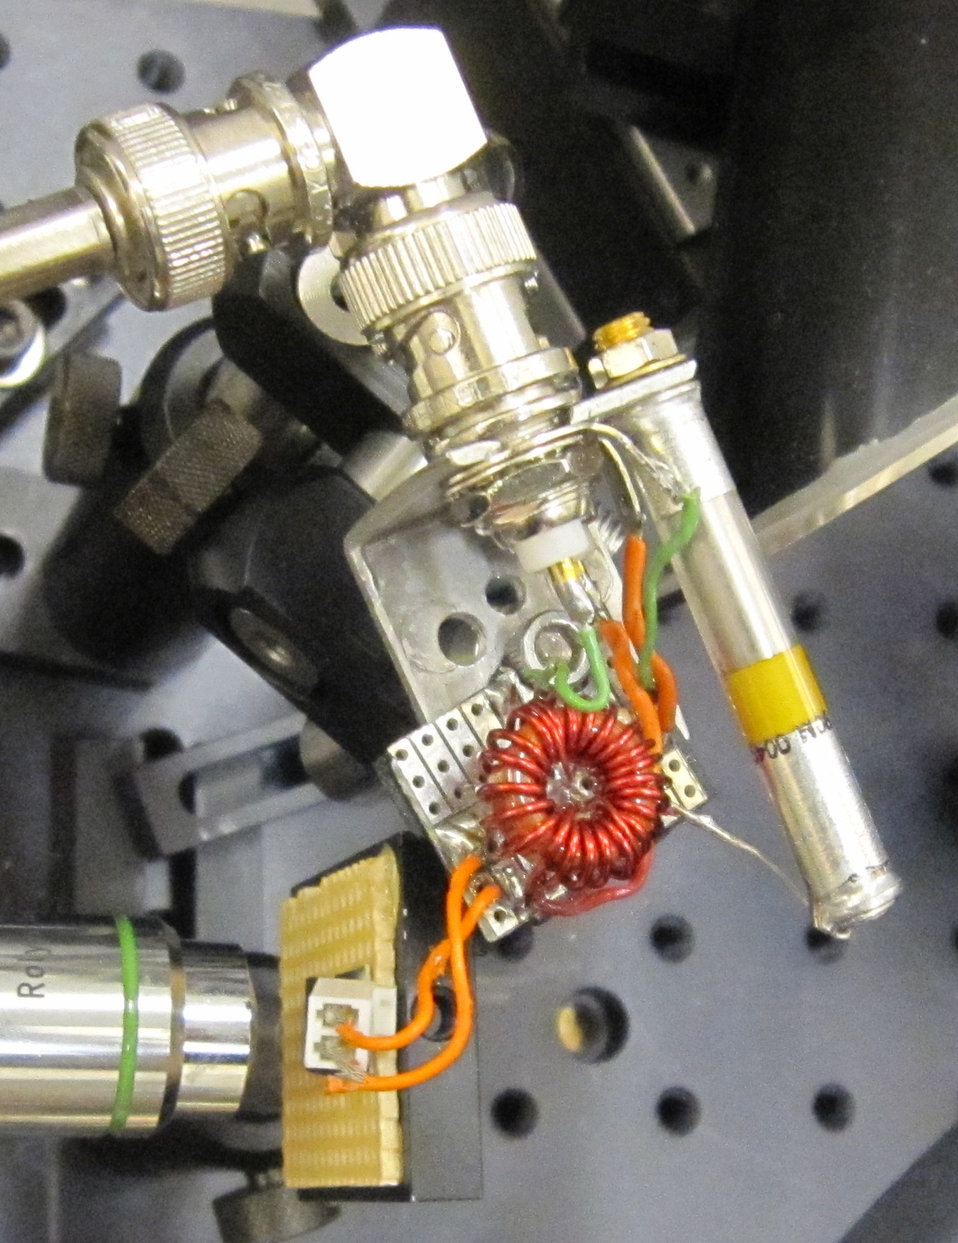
JILA; Radiation Instrument

JILA instrument for generating terahertz radiation. Ultrafast pulses of near-infrared laser light enter through the lens at left, striking a semiconductor wafer studded with electrodes (transparent square barely visible under the white box connected to orange wires) bathed in an oscillating electric field. The light dislodges electrons, which accelerate in the electric field and emit waves of terahertz radiation. The radiation bounces off the reflective dishes at the bottom and top of the photo and hits the circular detector on the right.